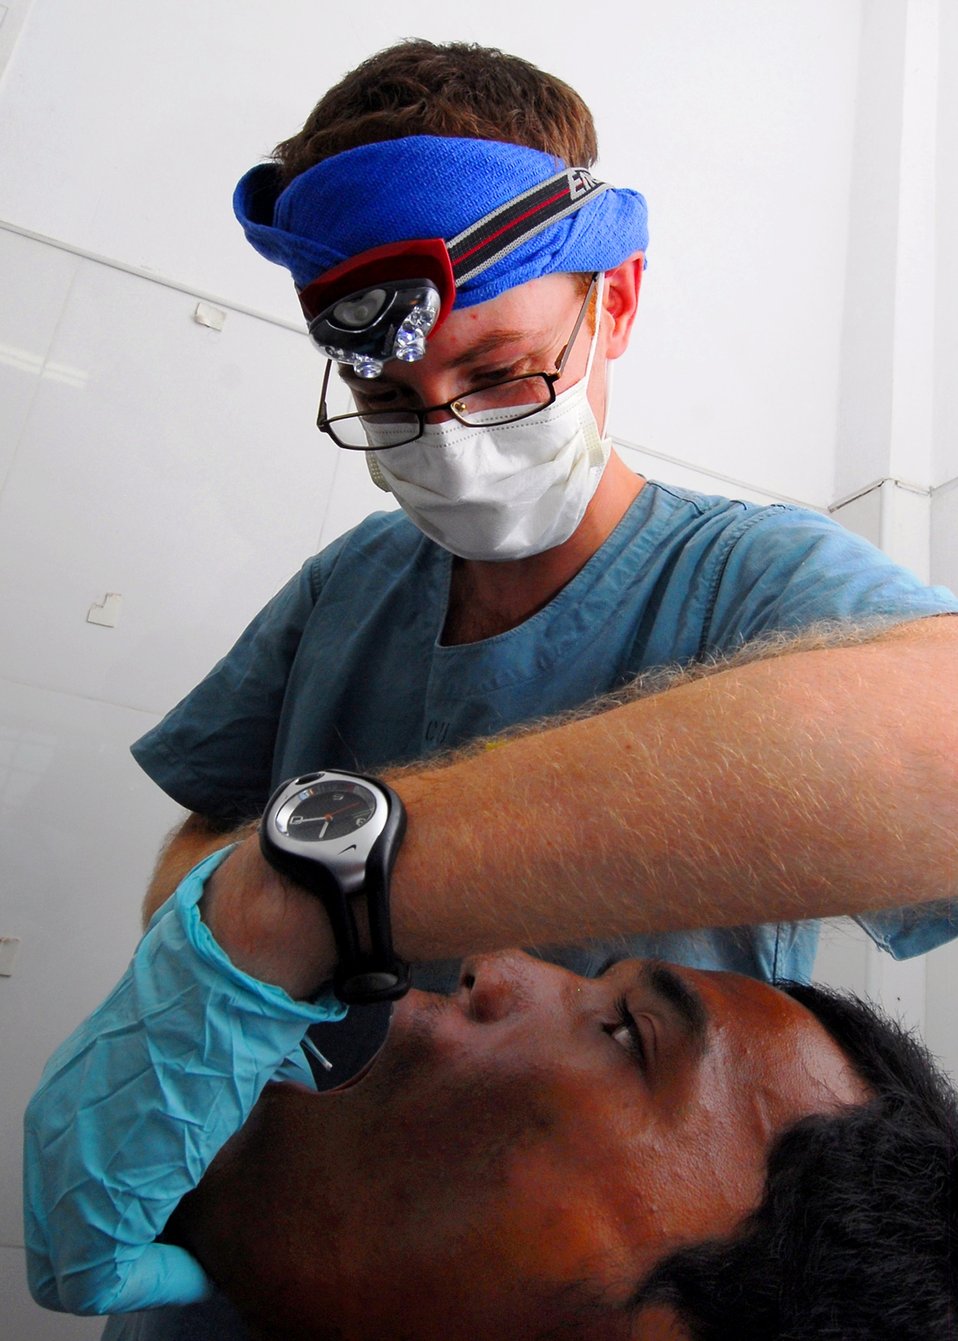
Canadian Army Capt. (Dr.) Jeff Hall prepares to remove broken tooth fragments from a patient during a dental community service event at Veal Ang Popel Clinic, in support of Pacific Partnership 2010, while the Military Sealift Command hospital ship USNS Mercy (T-AH 19) is in Kampong Spue, Cambodia, on June 25, 2010.